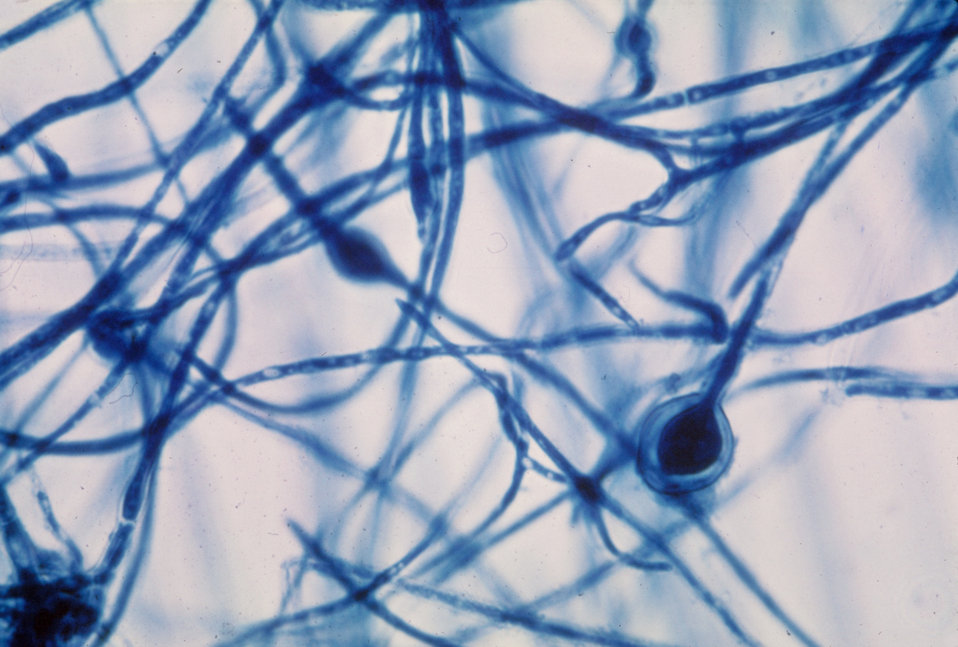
This micrograph reveals the terminal chlamydospores of the fungus Microsporum audouinii.